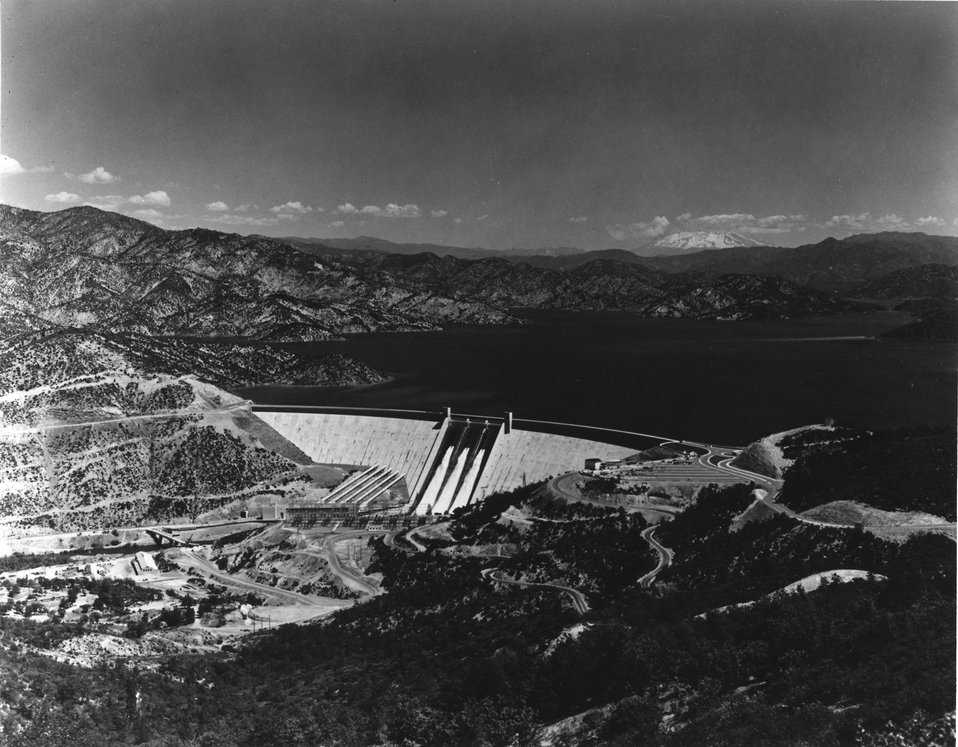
Sacramento, California. Mount Shasta Dam on the Sacramento River, Key Unit of the Central Valley Project. c. 1963